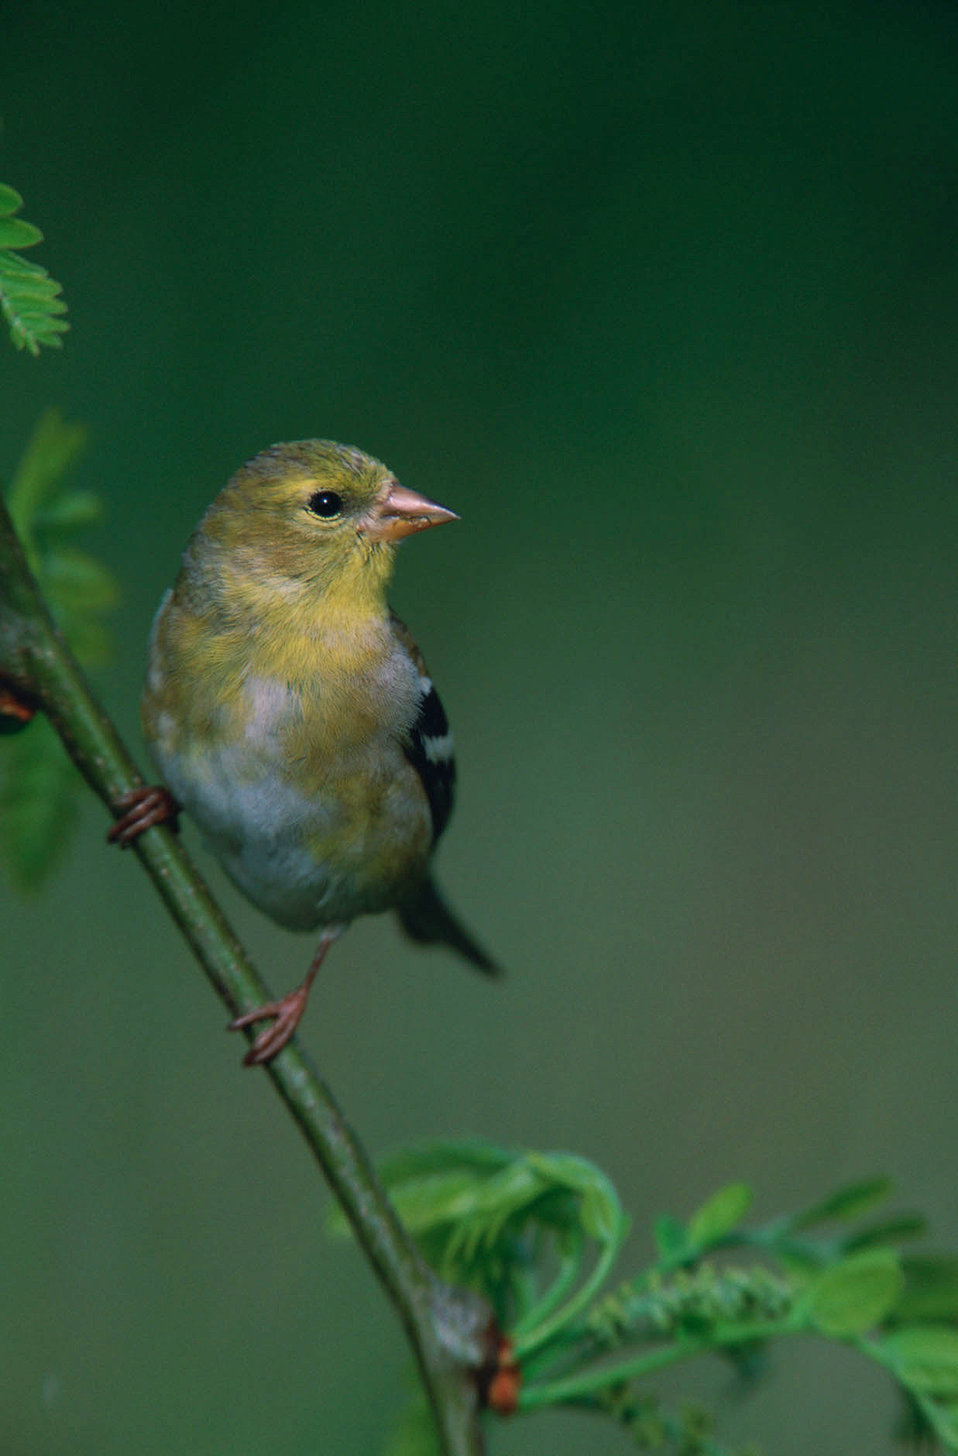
American goldfinch

An American goldfinch is pictured upclose resting on a branch.